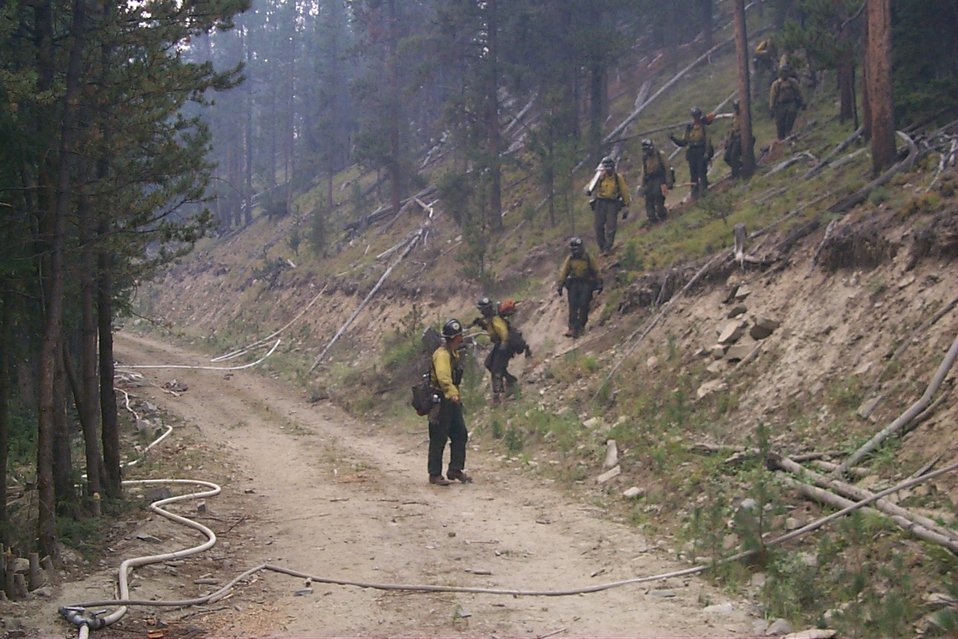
Fire crew Fire Clearwater Fire Salmon Field Office USRD Upper Snake River District